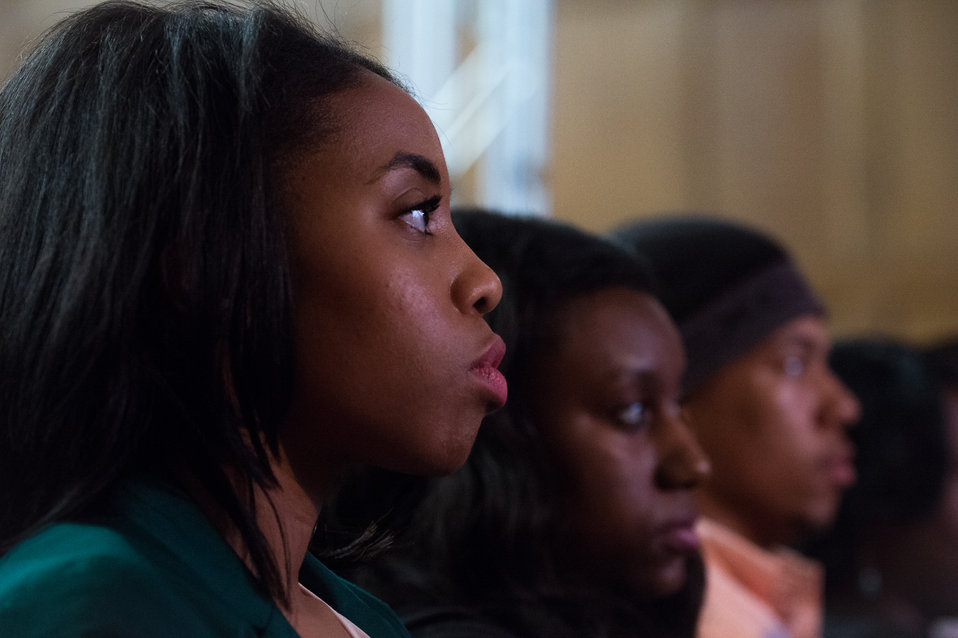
University of Maryland – Eastern Shore, University of Minnesota, The Norman Borlaug Institute for International Agriculture, Texas A and M University, Cornell University, Iowa State University, and the World Food Prize, students and interns listen, learn, and were given priority access to question and answer sessions with discussion panels during the Borlaug Symposium commemorating the late Dr. Norman Borlaug's 100th Birthday and vision, held in the Jefferson Auditorium of the U.S. Department of Agriculture (USDA) in Washington, D.C. on Tuesday, Mar. 25, 2014. The symposium highlights current efforts addressing global hunger. The symposium panels will feature high school and university students, as well as, scientists and policy advisors at Monsanto Chief Technology Officer Robb Farley talks about mobile communication and it's relationship to agriculture, at the Borlaug Symposium commemorating the late Dr. Norman E. Borlaug's 100th Birthday hosted by the U.S. Department of Agriculture (USDA) in the Jefferson Auditorium of USDA in Washington, D.C. on Tuesday, Mar. 25, 2014. The symposium will highlight current efforts addressing global hunger. The symposium panels will feature high school and university students, as well as, scientists and policy advisors at U.S. Agency for International Development (USAID), USDA and Non-Governmental Organizations (NGO). Questions from students and interns are given priority to panelists. Lightening presentations will have leading students and individuals present what they are doing to help achieve Dr. Borlaug’s vision of creating the next generation of hunger fighters. The symposium was planned in partnership with: U.S. Agency for International Development (USAID), Cornell University, Iowa State University, University of Minnesota, The Norman Borlaug Institute for International Agriculture, Texas A and M University, and the World Food Prize.